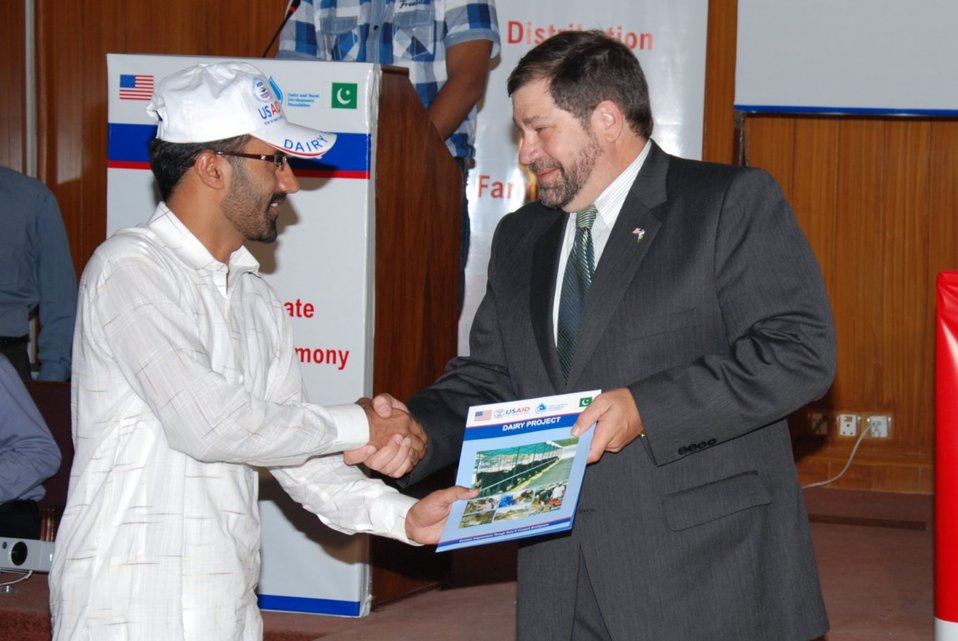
1 -USAID Mission Director Punjab Mr. Jeffrey Bakken awarding certificate to USAID Dairy Project-trained dairy farm managers